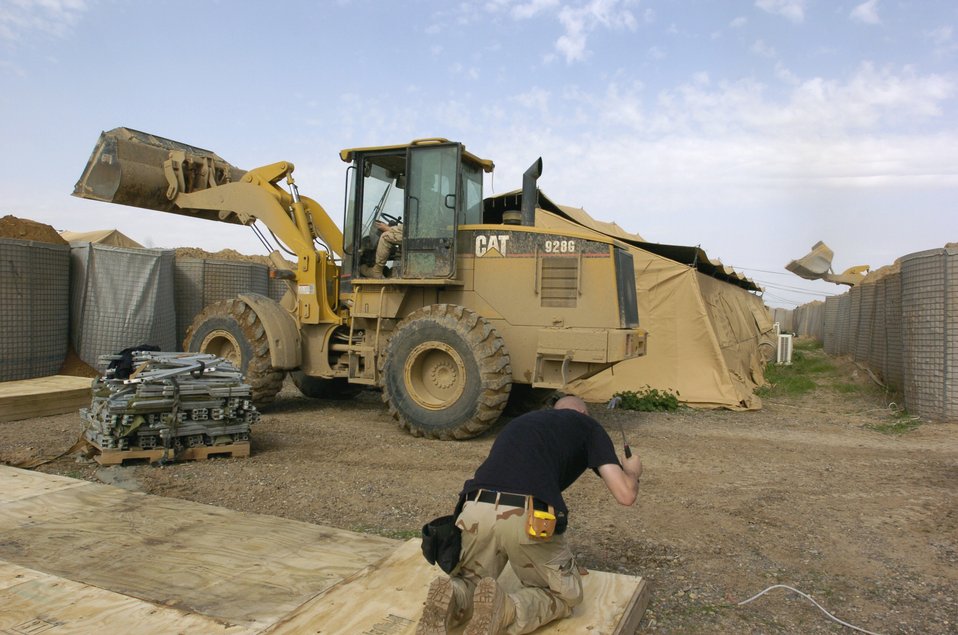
Engineers support the fight

Air Force engineers from the 557th Expeditionary Red Horse Squadron work to improve the quality of living for Soldiers from 1st Battalion, 327th Infantry Regiment, 101st Airborne Division, stationed on Forward Operating Base McHenry, Iraq.